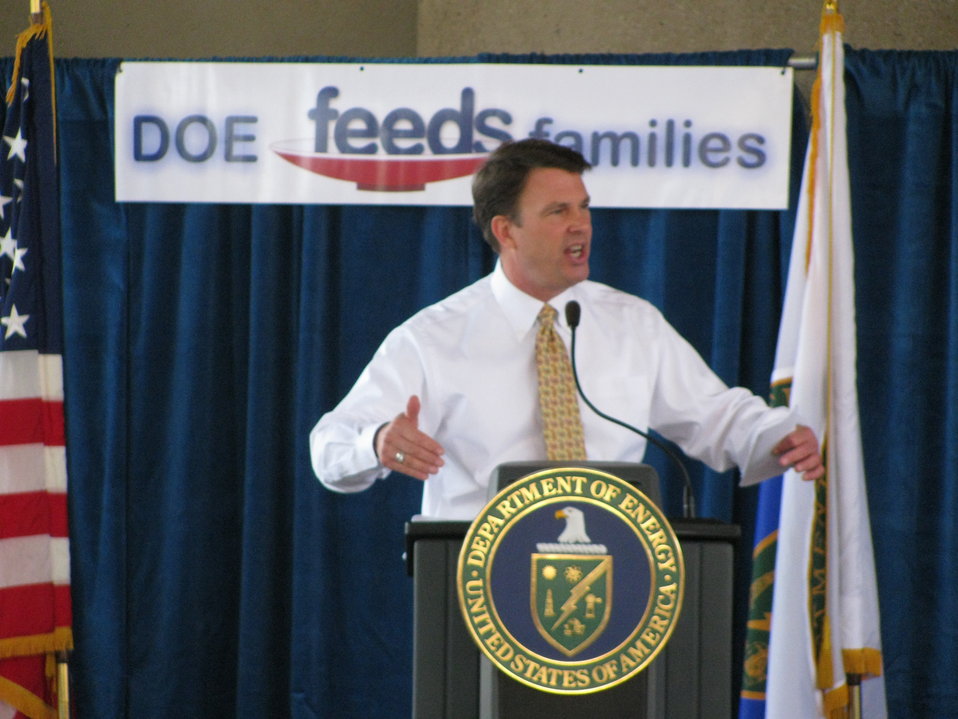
Director of White House Office of Personnel Management John Berry